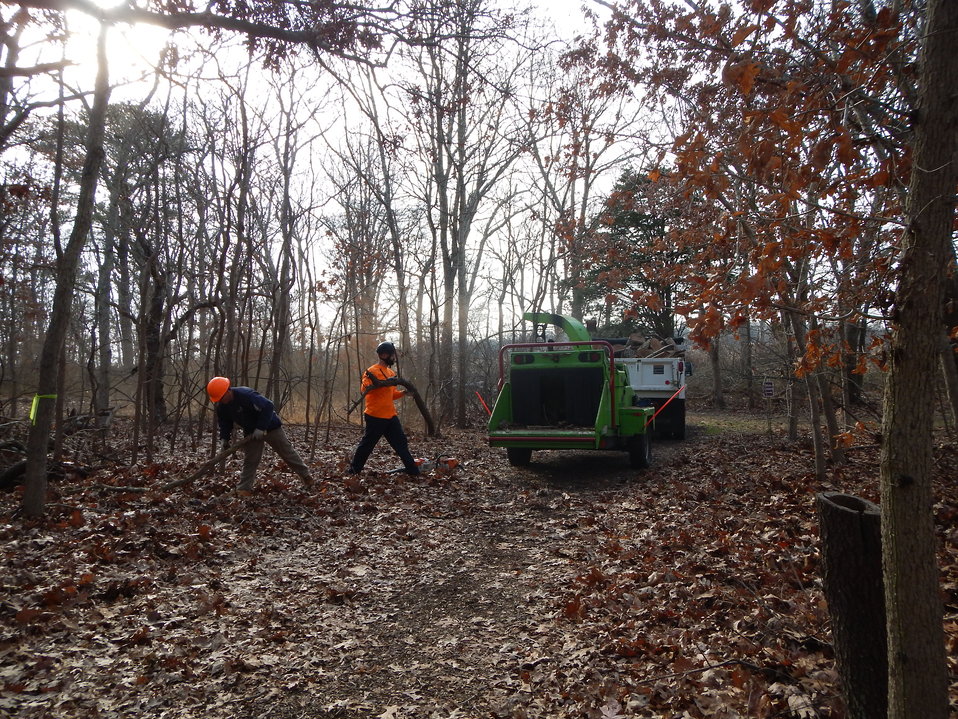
Tree removal at Wertheim National Wildlife Refuge

Clean-up of Hurricane Sandy damage.